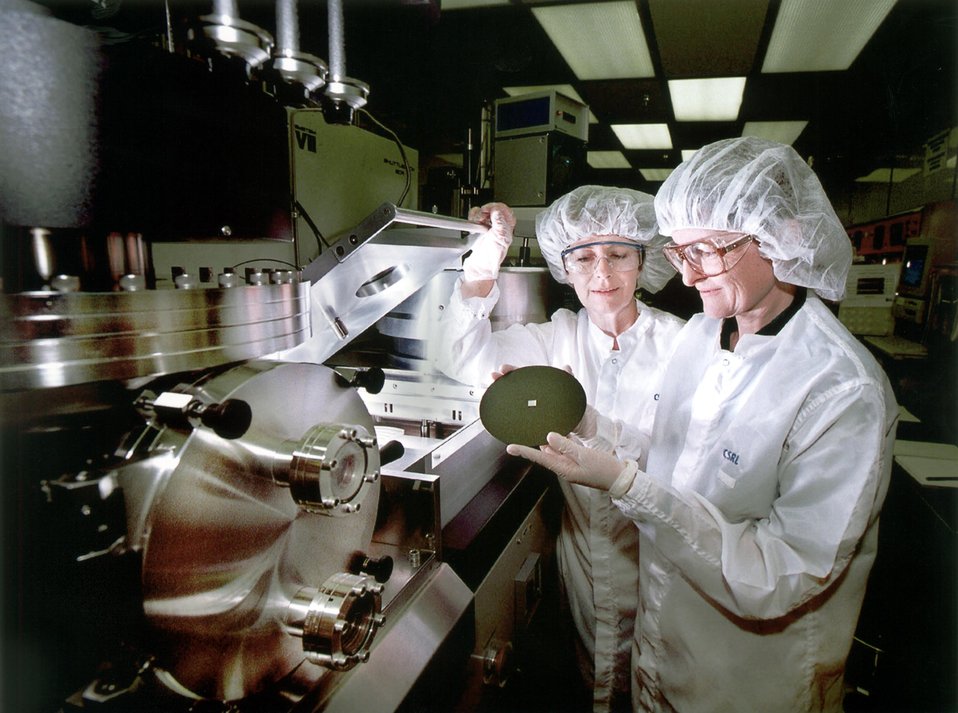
SANDIA RESEARCHERS PREPARE TO PUT WAFER SAMPLE INTO A HIGH-DENSITY PLASMA CHAMBER.

RESEARCHERS AT SANDIA HAVE CREATED A NEW MICROCHIP PROCESSING TECHNIQUE THAT CREATES RAISED, MICROSOPIC CANALS ON CHIPS, THROUGH WHICH LIQUIDS OR GASES CAN FLOW FROM ONE CHIP FEATURE TO ANOTHER. SUCH CANALS ARE USEFUL FOR EMERGING FAMILIES OF MINUSCULE GADGETS CALLED 'MICROFLUIDIC' DEVICES THAT MAKE USE OF THE CHEMICAL PROPERTIES OF LIQUIDS OR GASES AND THE ELECTRICAL PROPERTIES OF SEMICONDUCTORS ON A SINGLE CHIP OR AMONG NEARBY CHIPS.